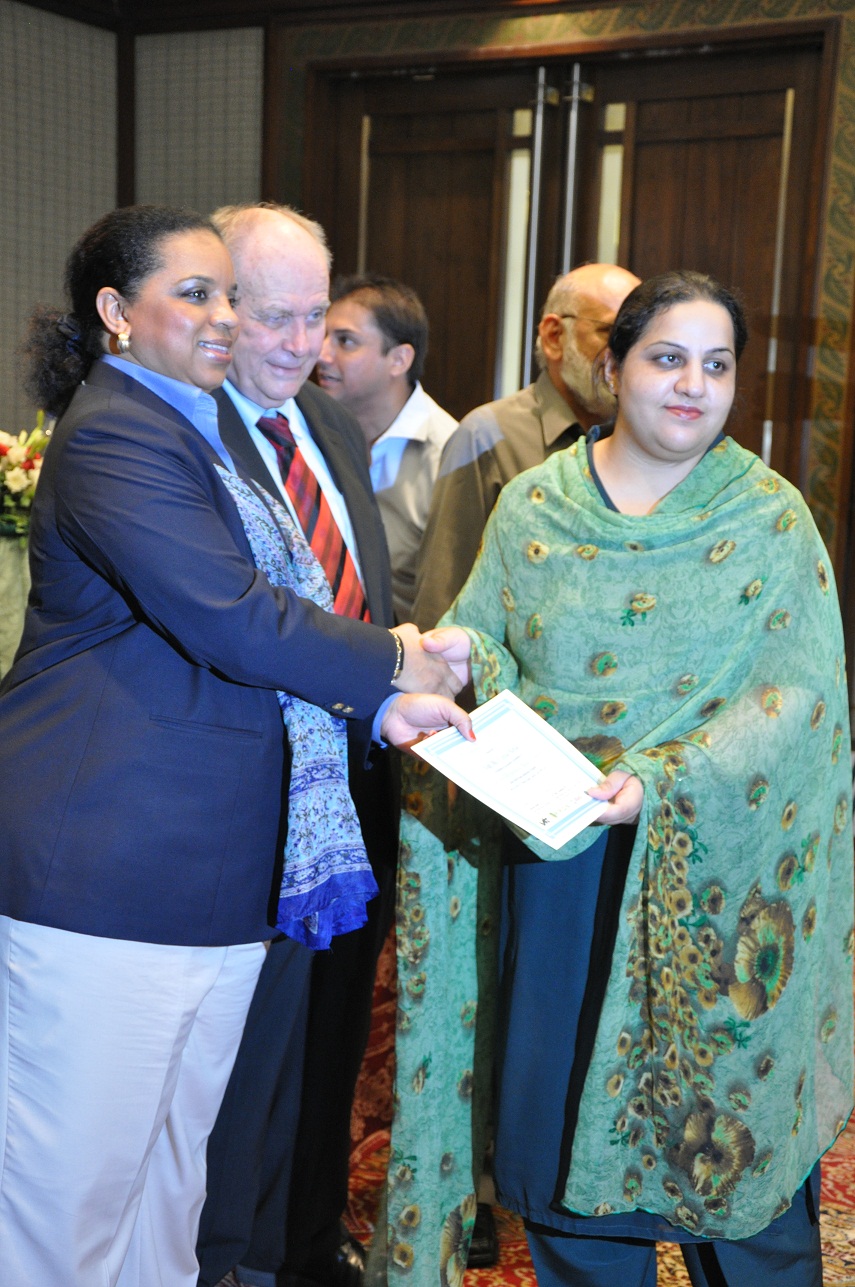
Planning and Engineering Workshop at Lahore

Lahore, July 20, 2012: The United States is strengthening Pakistan’s energy sector and helping to end energy shortages. In this effort, Acting Director USAID Punjab Gail Spence distributed certificates to mangers from nine power sector distribution companies (DISCOs) who completed a U.S.-funded five-day Planning and Engineering training program. The training aims to modernize the Planning and Engineering (P&E) sectors of the DISCOs improving energy distribution across Pakistan. “I am confident that thanks to this training, Pakistan will now be better able to meet its power sector reform targets and reduce the energy crisis,” Ms. Spence remarked.

The USAID Power Distribution Program organized the training in close collaboration with the Lahore Electric Supply Company (LESCO). The four year USAID Power Distribution Program is a testament to the United States’ commitment to supporting Pakistan’s energy sector. Through the Power Distribution Program, USAID is helping DISCOs modernize equipment, receive expert consultations, and introduce international best practices to ensure a more reliable supply of power to consumers.